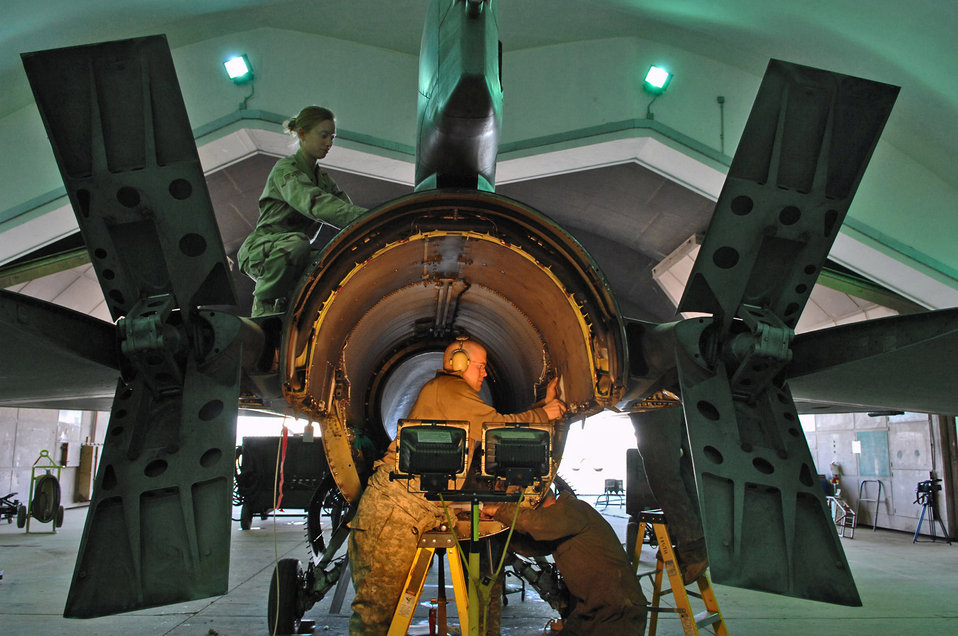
Check and re-check

Senior Airmen Rebeca Hill and Christopher Jaeger perform maintenance Feb. 21 on an F-16 Fighting Falcon at Balad Air Base, Iraq. The F-16 goes through an overhaul every 300 hours.